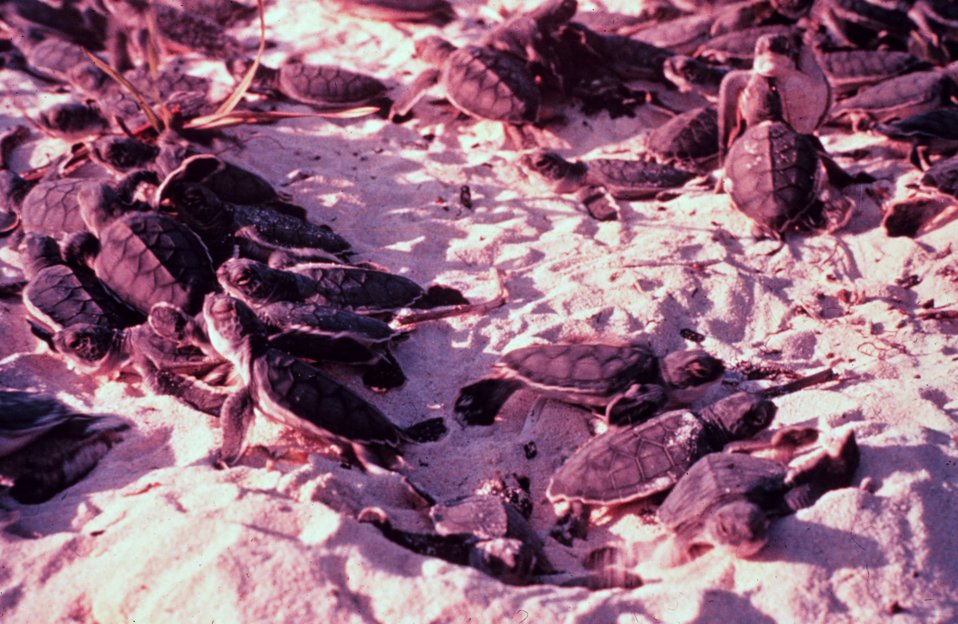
Two months after the female loggerhead sea turtles nest on the beaches within Canaveral National Seashore, 80-100 baby sea turtles emerge from each nest and make their way to the ocean.